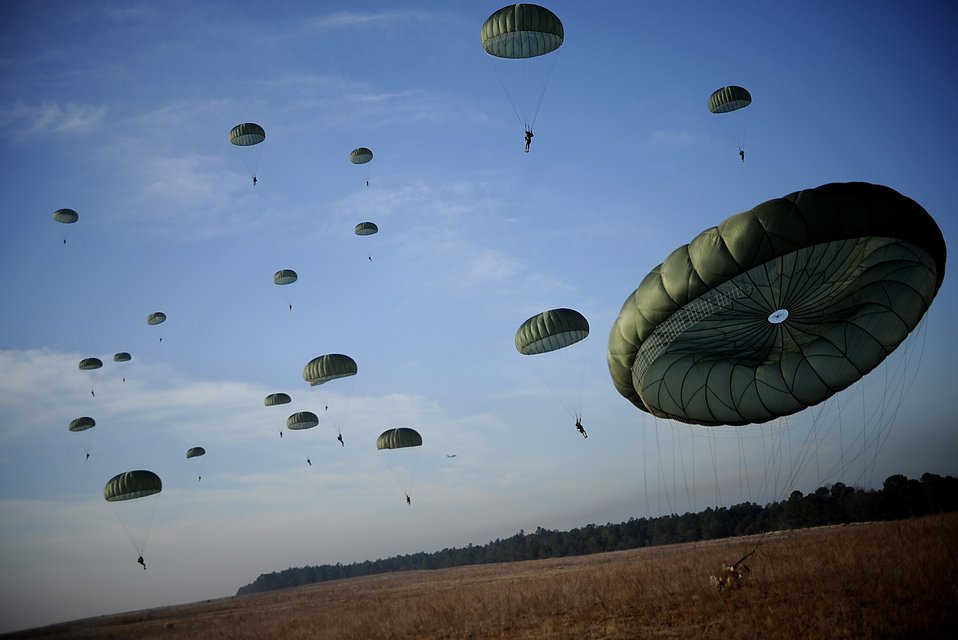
Operation Toy Drop

Army Soldiers from the 82nd Airborne Division from Fort Bragg, N.C., descend under parachute canopies to earn foreign jump wings Dec. 6 during Operation Toy Drop at Fort Bragg, N.C. Operation Toy Drop is an annual Airborne jump at Fort Bragg in its 11th year hosted by the Army Civil Affairs and Psychological Operations Command (Airborne), and supported by Fort Bragg's XVIII Airborne Corps and the Air Force Reserve Command's 440th Airlift Wing at Pope Air Force Base that gives Soldiers and Airmen the opportunity to help local families in need over the holidays while boosting morale and incorporating valuable training. More than 3,000 Soldiers donated a toy for a lottery ticket and the chance to jump under a foreign jumpmaster, earning them their foreign jump wings. This year, German and Irish jumpmasters will be issuing the commands from C-130 Hercules aircraft during the operation.